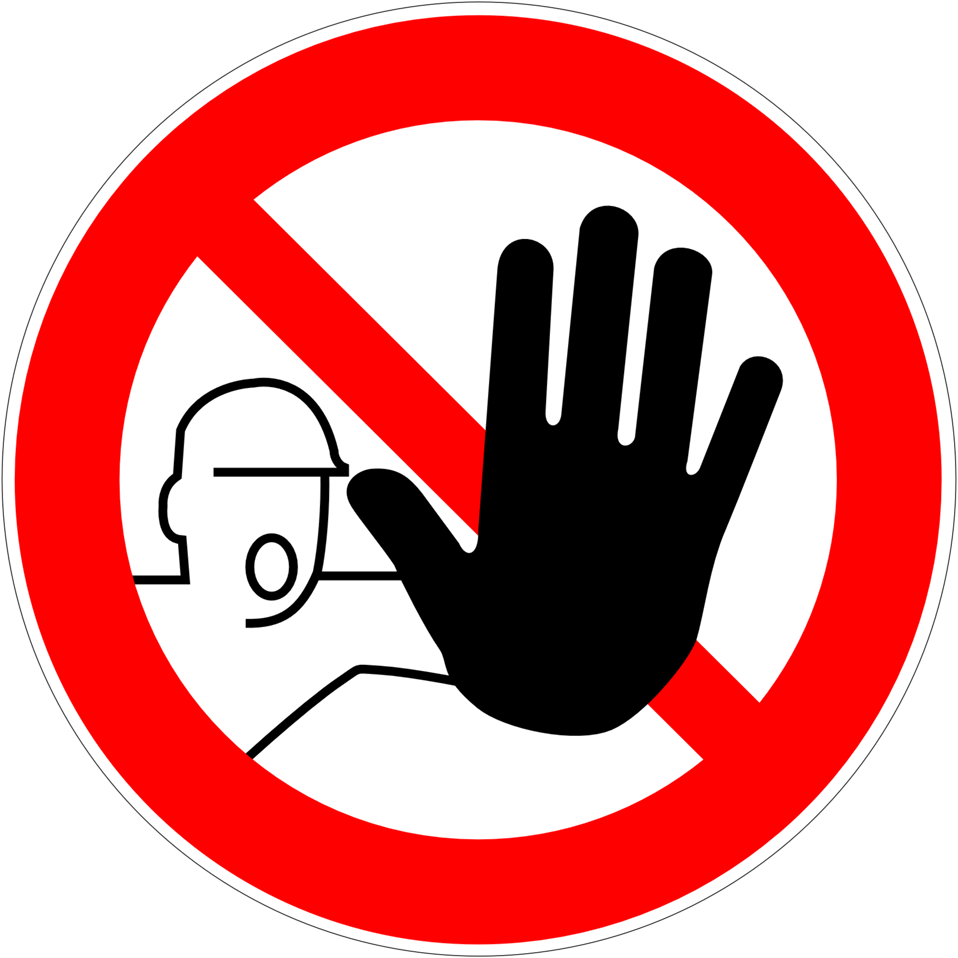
Deutsch: Zutritt für Unbefugte verboten, Verbotszeichen D-P006 nach DIN 4844-2 Prohibition sign 'No unauthorized entry', sign D-P006 according to German industry standard DIN 4844-2